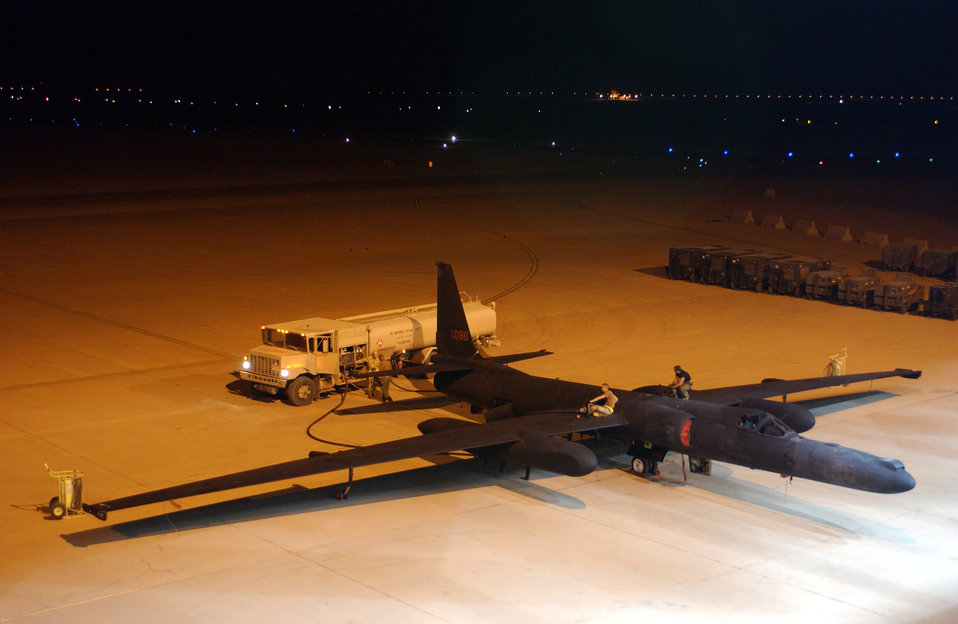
Dragon Lady refuels

OPERATION IRAQI FREEDOM -- Air Force members deployed from the 9th Aircraft Maintenance Squadron, Beale Air Force Base, Calif., to the 363rd Expeditionary Aircraft Maintenance Squadron, refuel a U-2 Dragon Lady after returning from a mission on April 13. The U-2 is a high altitude-multi intelligence reconnaissance aircraft. It can fly above 70,000 ft and provides near-real-time imagery and signals intelligence to war fighters and national authorities in support of Operation Iraqi Freedom at a forward deployed location in Southwest Asia.